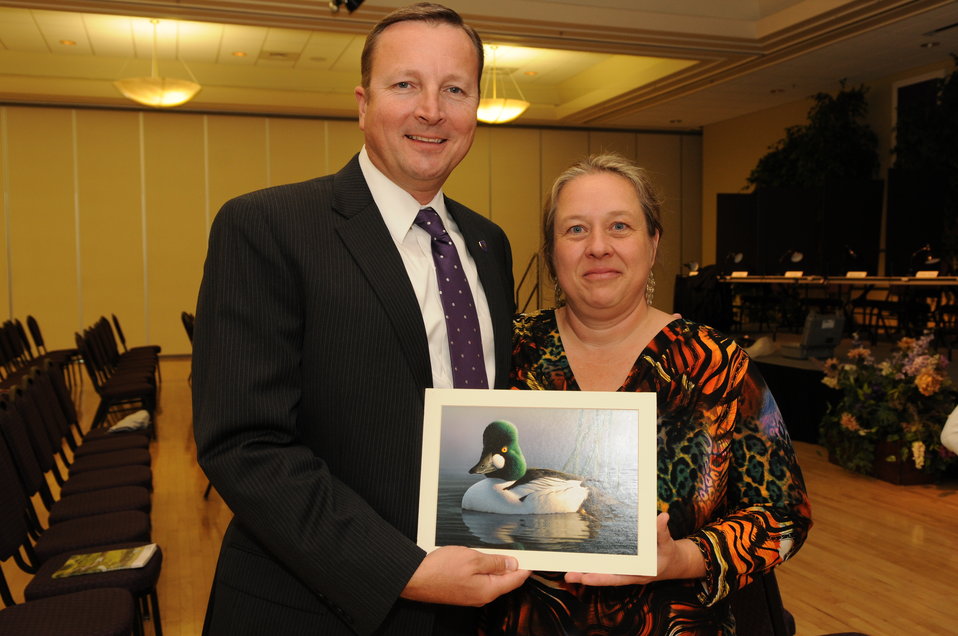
Everyone Loves a Winner

The U.S. Fish & Wildlife Service sponsored the 2012 Federal Duck Stamp Art Contest September 28 and 29 in Ogden, Utah, at Weber State University. A panel of five judges was responsible for choosing the art work used to design the 2013-2014 Migratory Bird Hunting and Conservation Stamp.